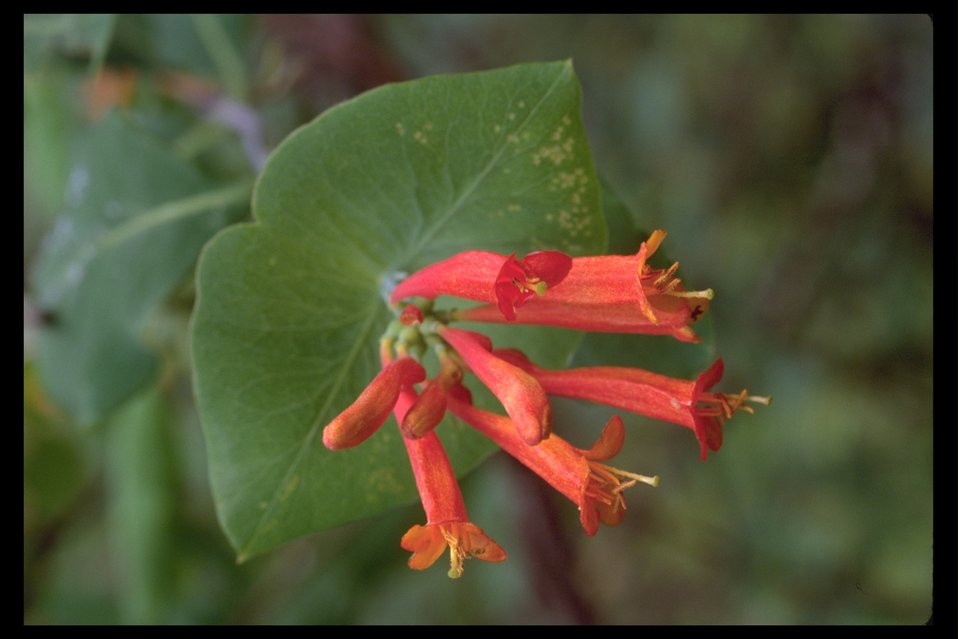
Close up of Orange Honeysuckle (Lonicera ciliosa) along West Fork Trail Creek.